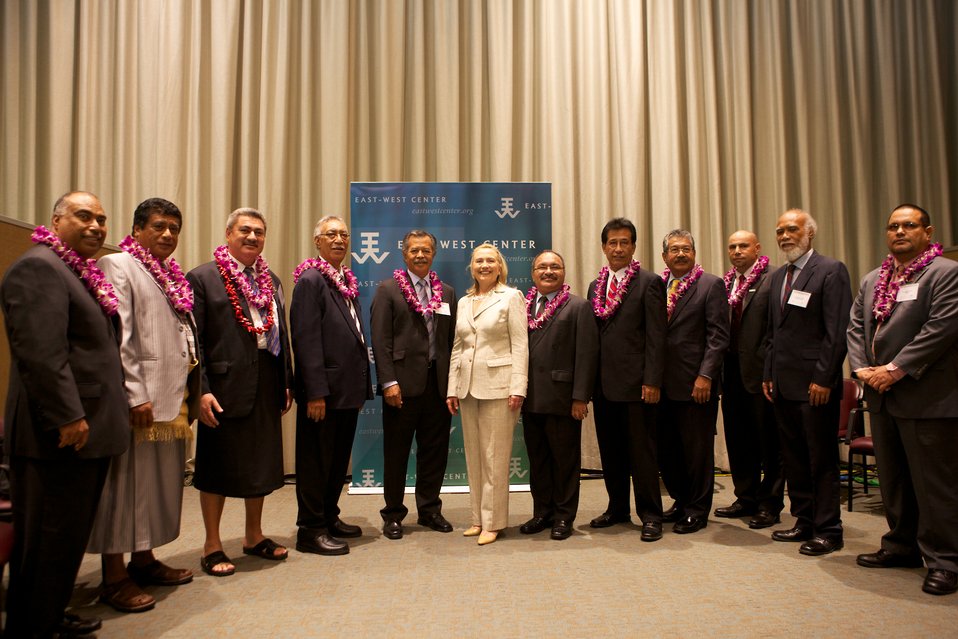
Secretary Clinton Meets with Pacific Island Delegates

U.S. Secretary of State Hillary Rodham Clinton meets with delegates from the Pacific Islands in Honolulu, Hawaii, on November 10, 2011.